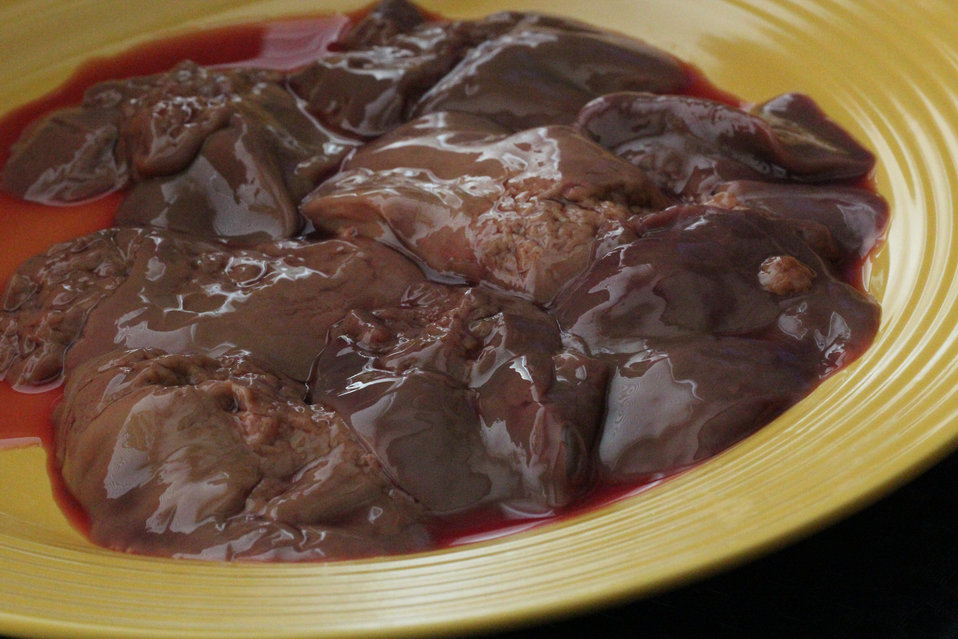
This image depicts a yellow ceramic plate atop which was set a portion of uncooked, freshly-purchased beef liver, that was about to be cooked and made ready for proper, safe consumption. See PHIL 14814, for an image depicting this uncooked beef liver after having been properly cooked.